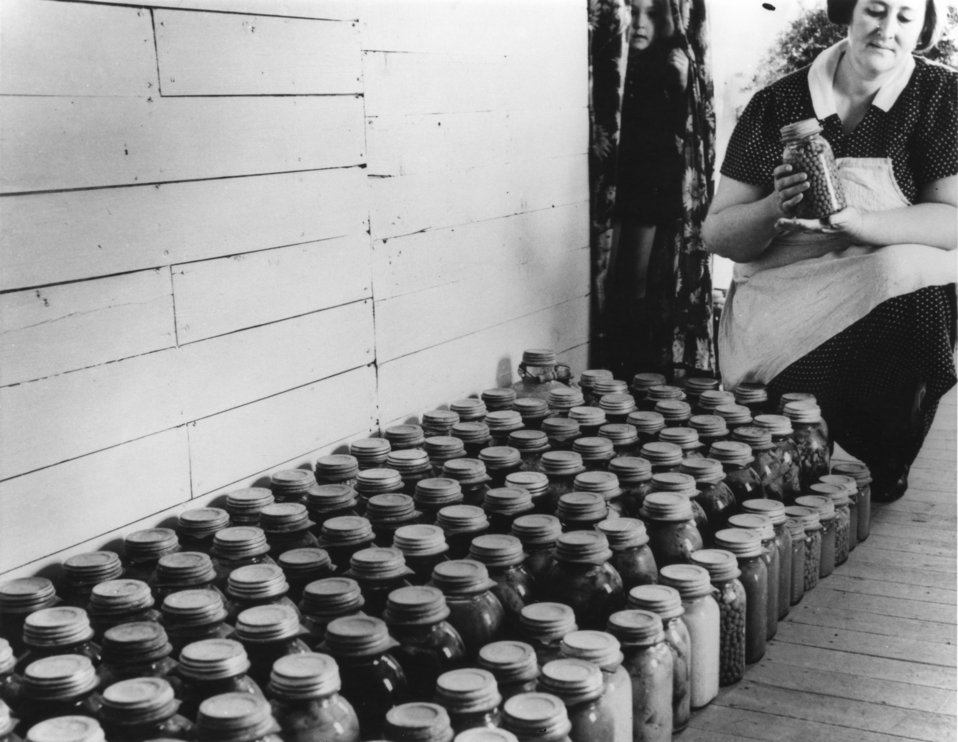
Early settlers at Oak Ridge